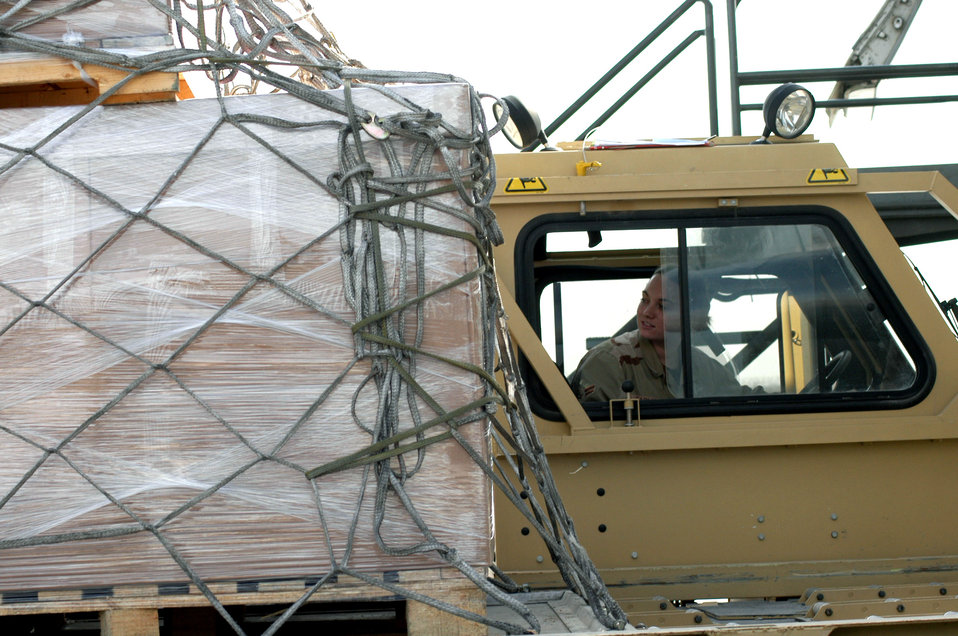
Air terminal operators keep OEF freight, passengers moving

KARSHI-KHANABAD AIR BASE, Uzbekistan -- Airman 1st Class Cristel Carlisle operates an aircraft loader capable of holding more than 25,000 pounds of cargo during airfield cargo here recently. She is an air transportation apprentice deployed here from Maxwell Air Force Base, Ala.